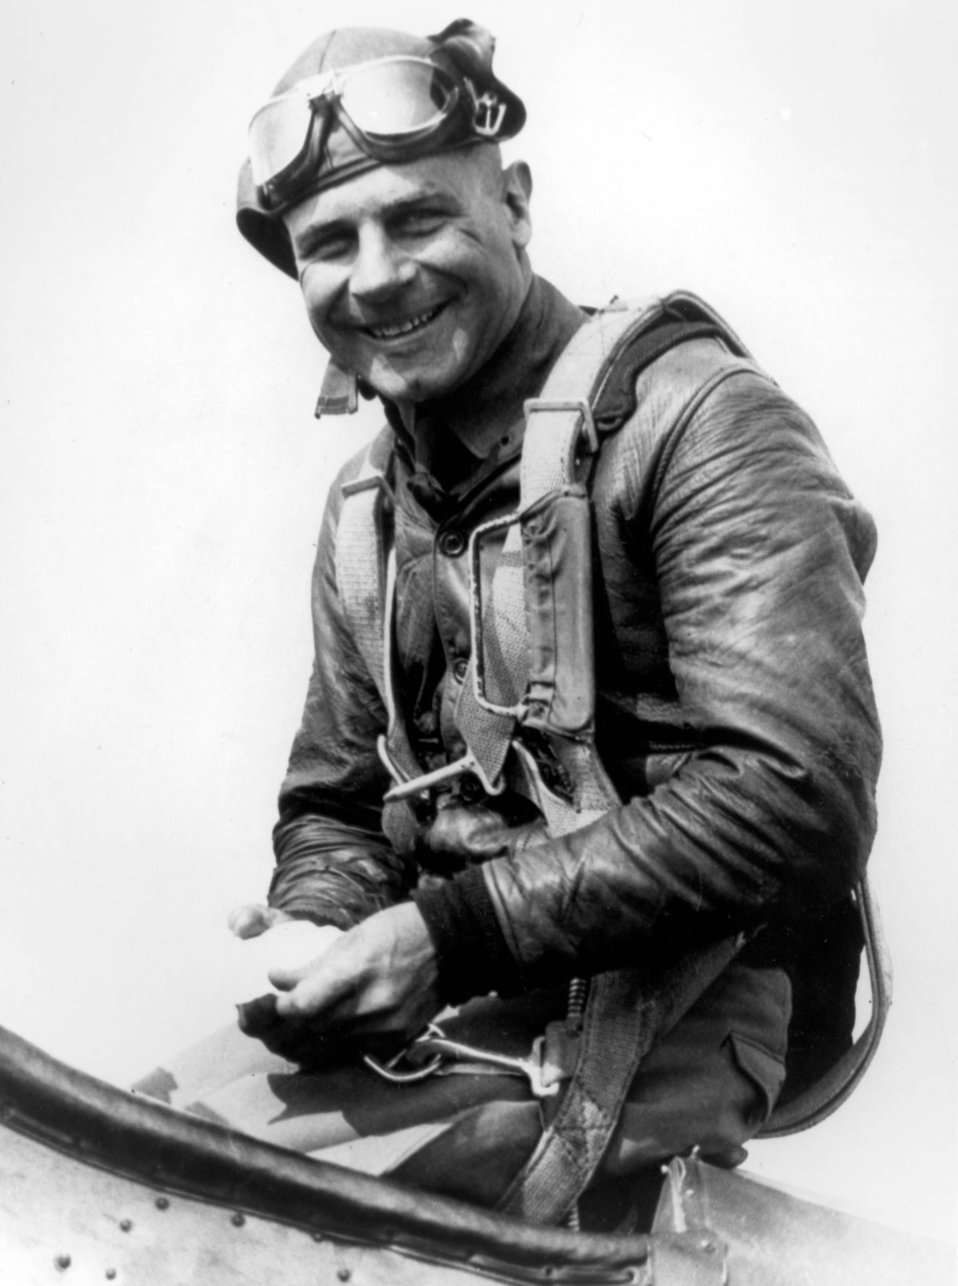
Jimmy Doolittle

Lt. James H.